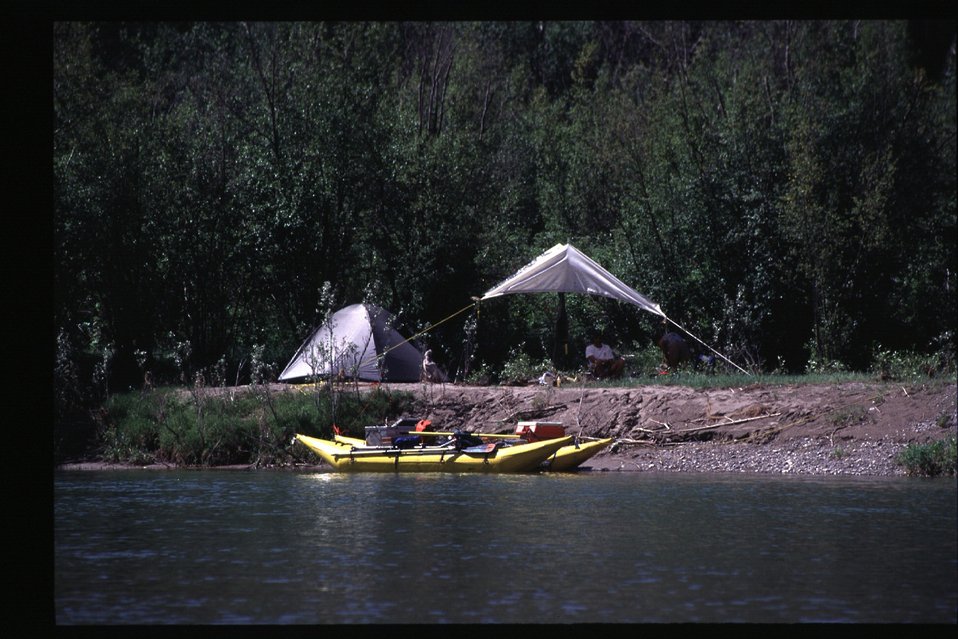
Rafting and camping South Fork of Snake River Idaho Falls Field Office USRD Upper Snake River District